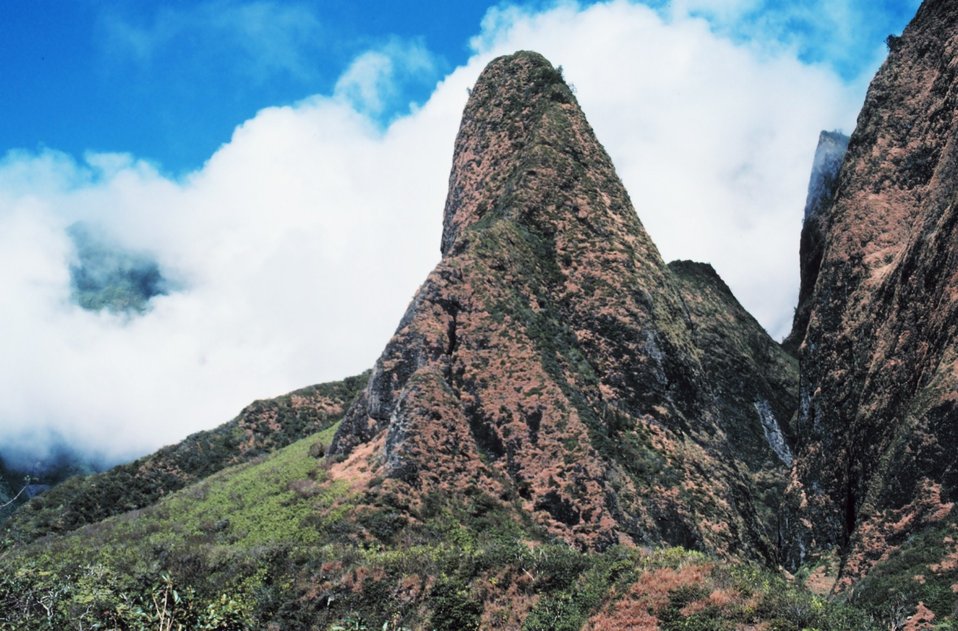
View of the Iao Needle in the West Maui Mountains